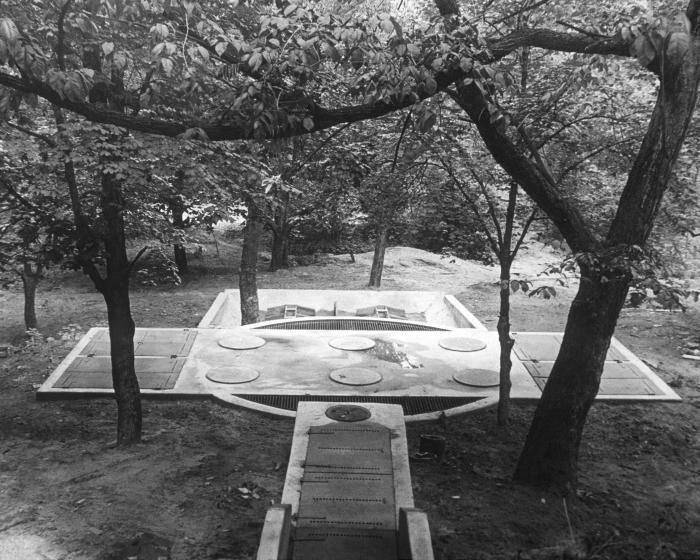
This historic 1915 photograph presented the exterior view of an Imhoff tank that was located in Faribault, Minnesota at a school for the mentally challenged. Descriptive data accompanying the image indicated that the photograph was labeled Plate file, no. 83. The Imhoff tank was a chamber created to receive, and process raw sewage. At its essence was a two-story septic tank. It collected sewage in the upper chamber in which sedimentation took place. The solids fell down sloped inclines to a bottom chamber in which the sludge was collected and digested.